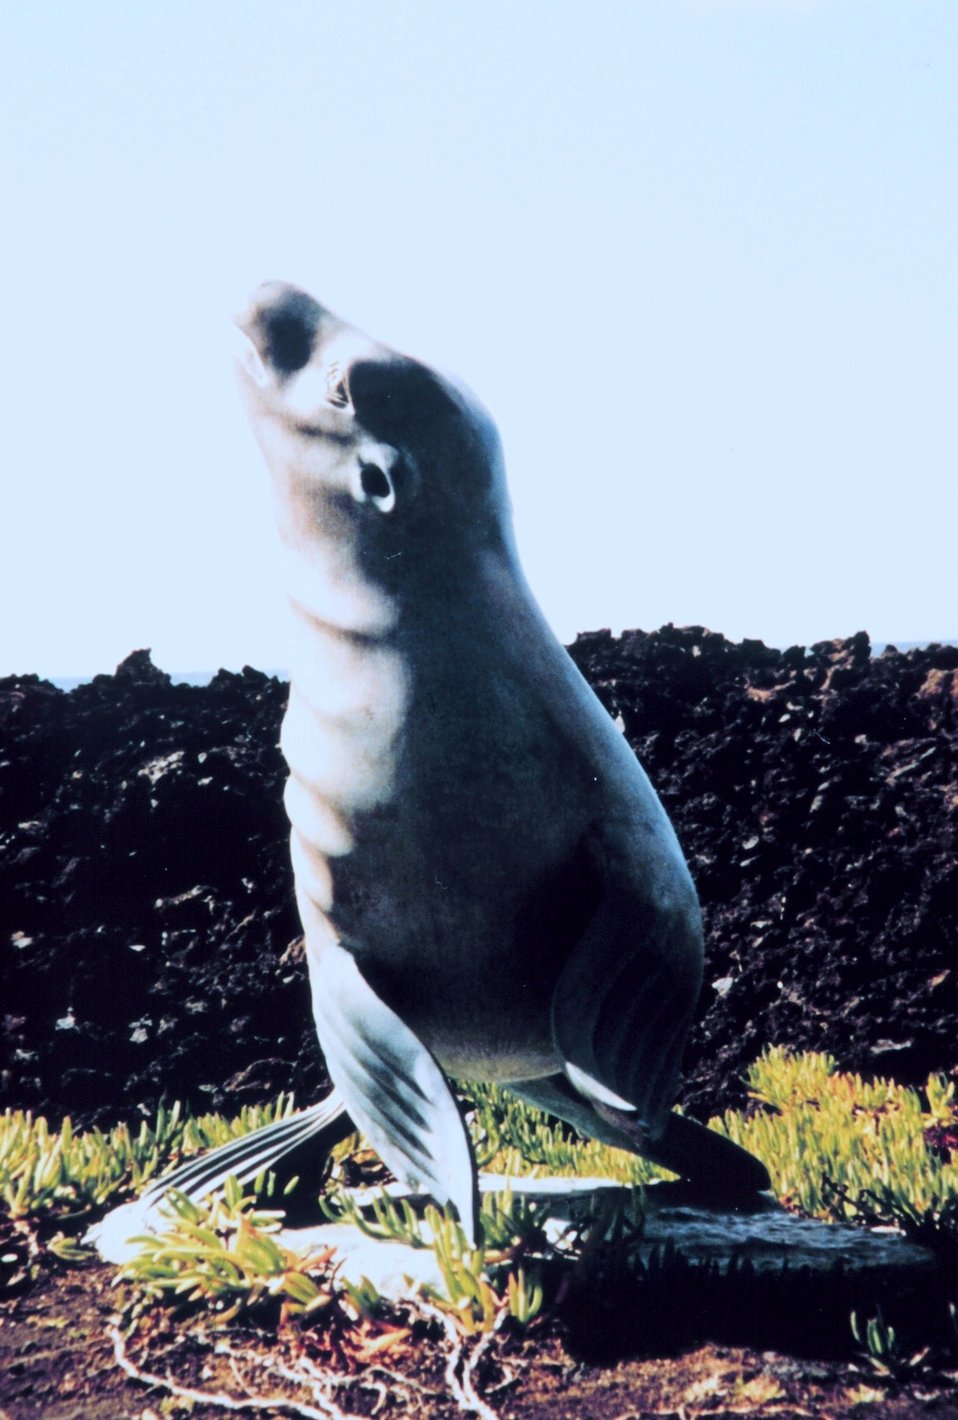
Statue of Hawaiian monk seal - Monachus schauinslandi.